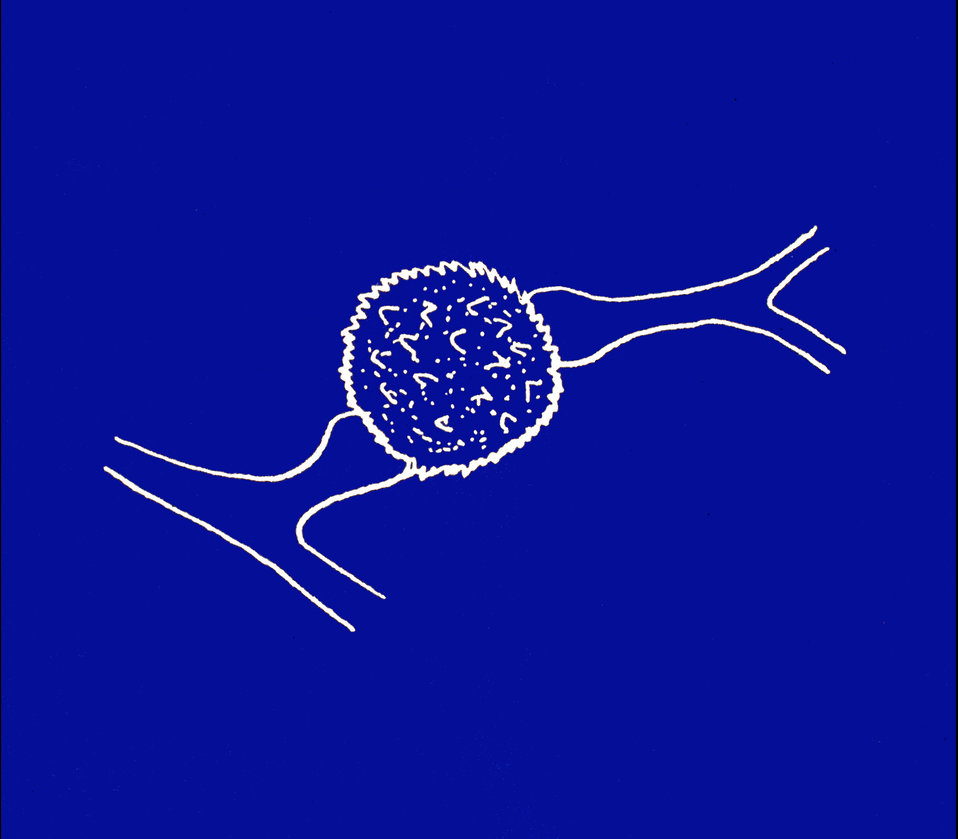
This illustration depicts the formation of a zygospore, which is a characteristic of sexual reproduction in Zygomycetes.